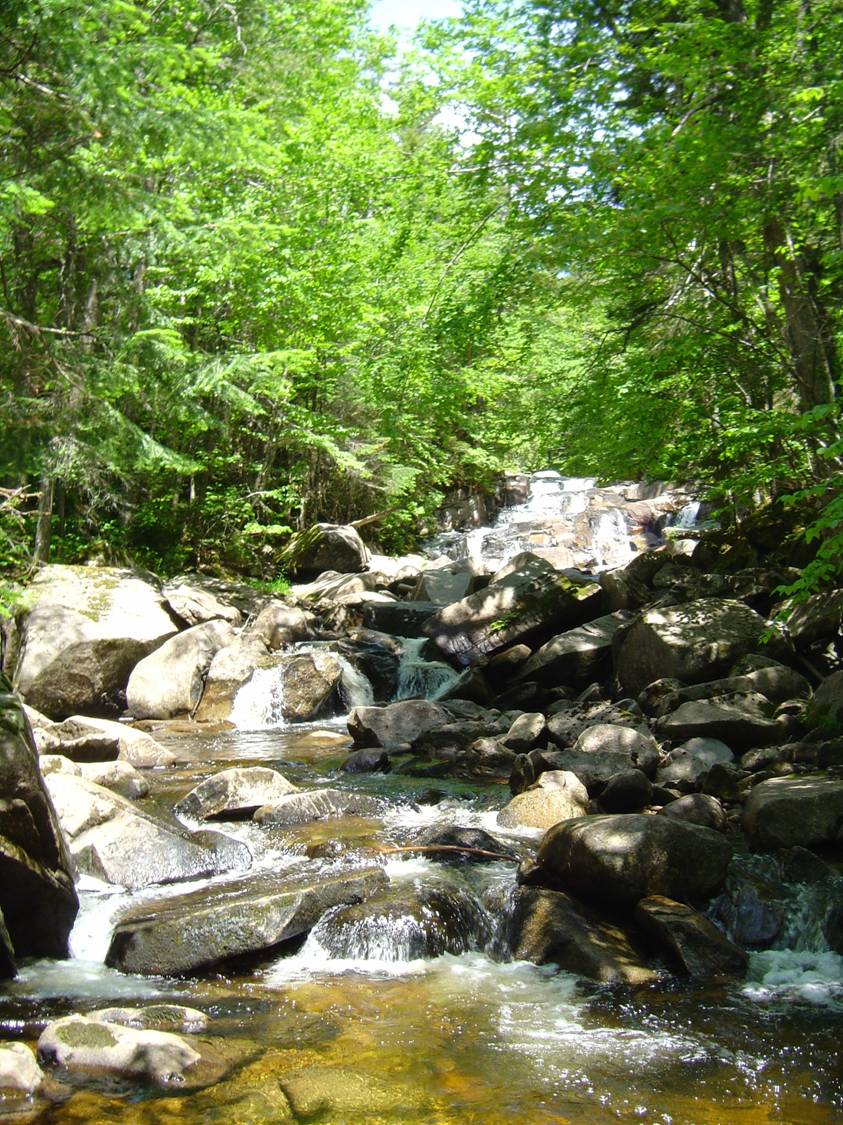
Black Branch

Nulhegan Basin Division, Silvio O. Conte National Wildlife Refuge.